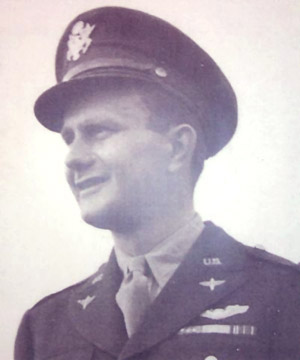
Maj. John L. Jerstad, Medal of Honor recipient for bravery during Operation Tidal Wave.